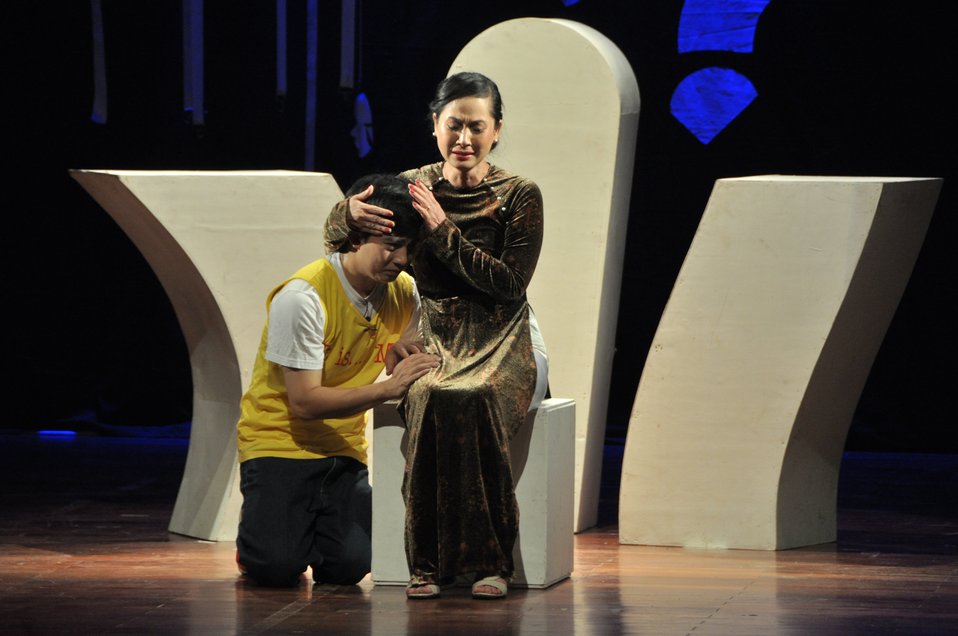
PEPFAR Musical Questions and Exclamations

Hanoi, May 17, 2013